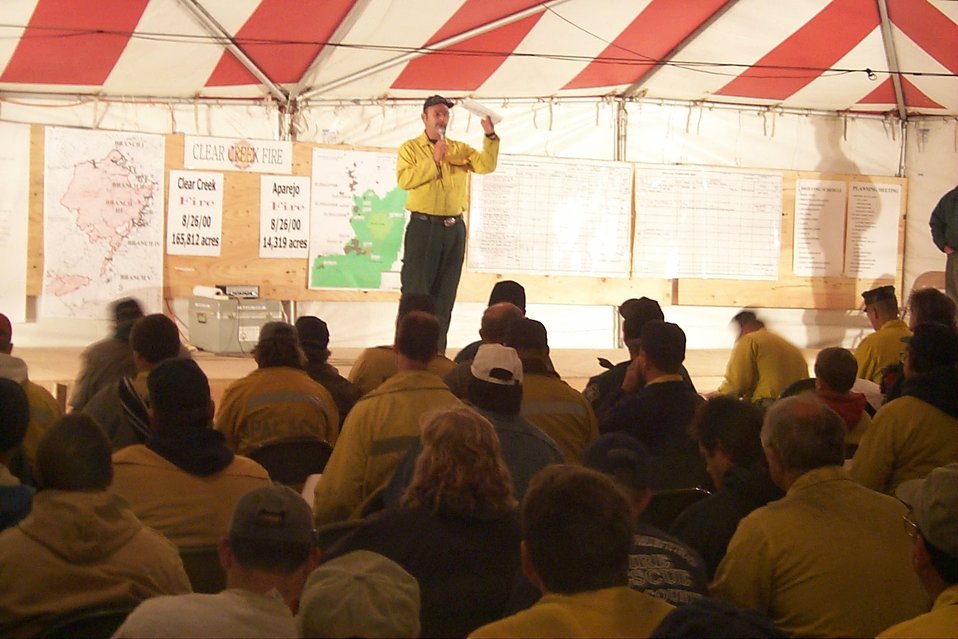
Incident Briefing Clearwater Fire Fire Salmon Field Office USRD Upper Snake River District